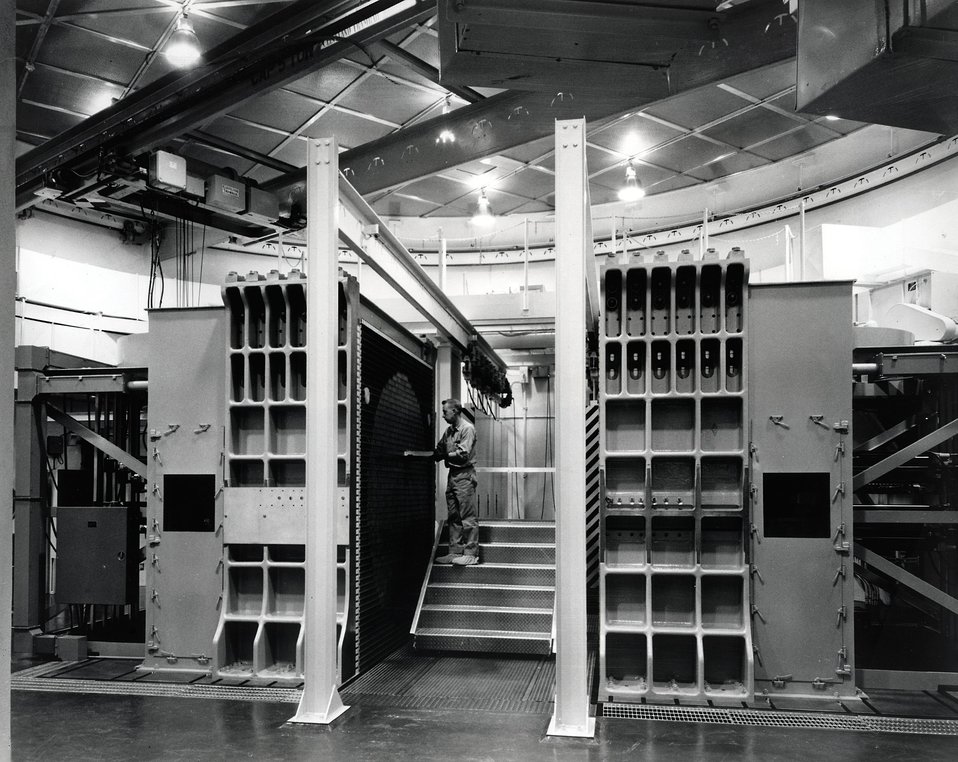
A drawer containing nuclear fuel is shown being loaded into the matrix of Argonne National Laboratory's recently completed Zero Power Plutonium Reactor.